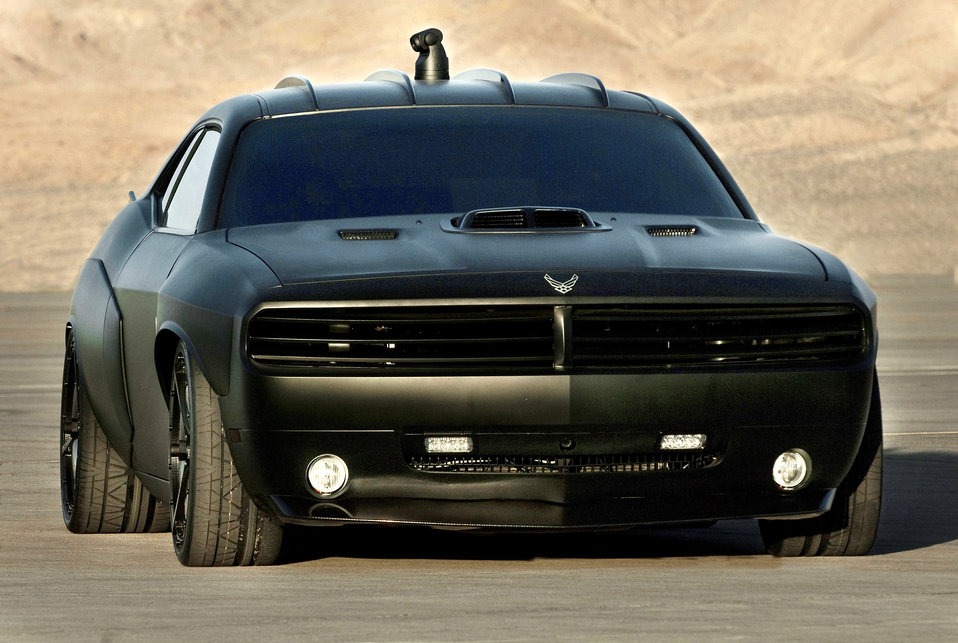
Super Car Tour

The stealth-black Air Force Challenger 'Vapor' features a biometric access to open the vertical doors, a custom stealth body kit with jet enhancements and a carbon fiber exterior trim. Other exterior components include one-off carbon fiber wheels, a custom stealth exhaust mode that allows the vehicle to run in complete silence or the headers can be opened facilitate the aggressive sound of the engine. The vehicle features a shaker hood, radar-absorbing paint, proximity sensors and a 360-degree camera with a quarter-mile range. The Vapor is one of the Air Force's newest mobile marketing assets and will be touring high schools and a variety of Air Force sponsored events as part of the 2009 Super Car Tour.